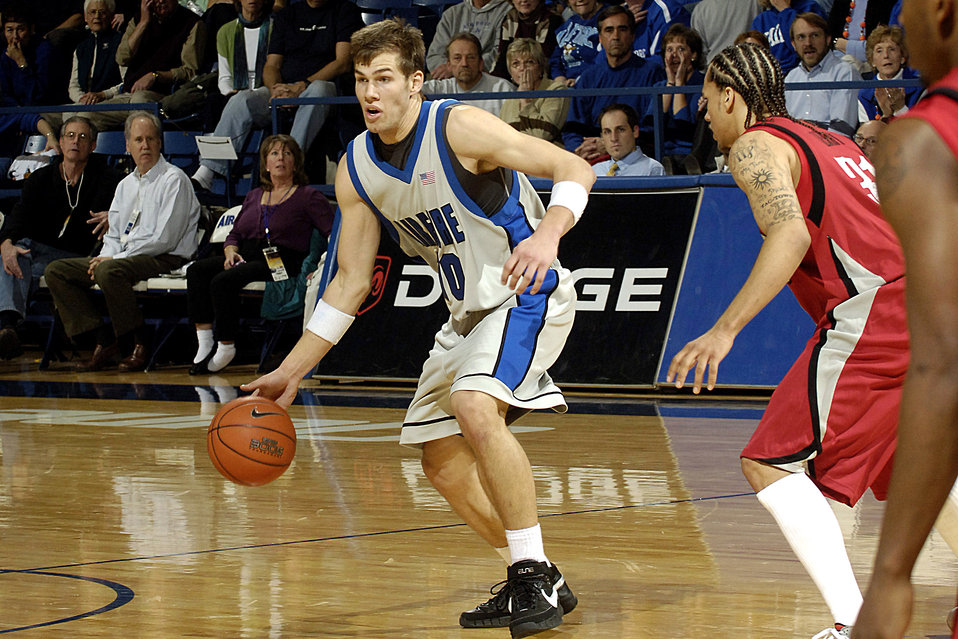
Academy defeats UNLV 65-53

U.S. Air Force Academy junior guard Andrew Henke drives down court as the Falcons beat the University of Nevada Las Vegas, 65-53, in a Mountain West Conference game Jan. 13 in Clune Arena at Colorado Springs, Colo.